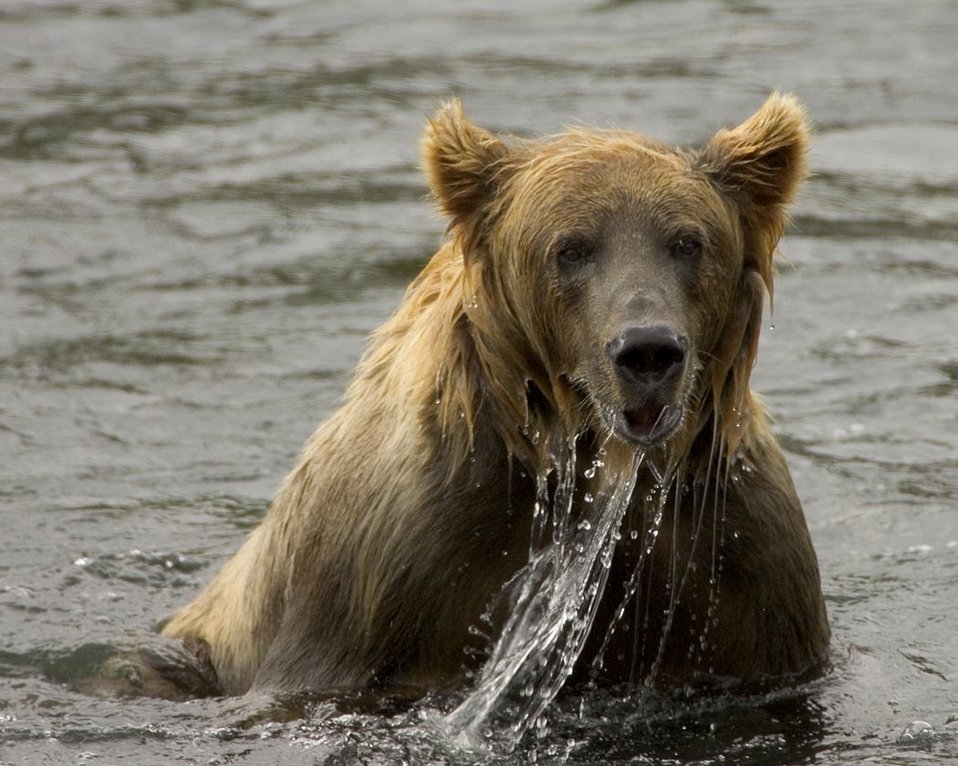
Brown bear fishing, Kodiak NWR

A brown bear emerges from salmon fishing in the Kodiak National Wildlife Refuge (http://kodiak.fws.gov) in Alaska.